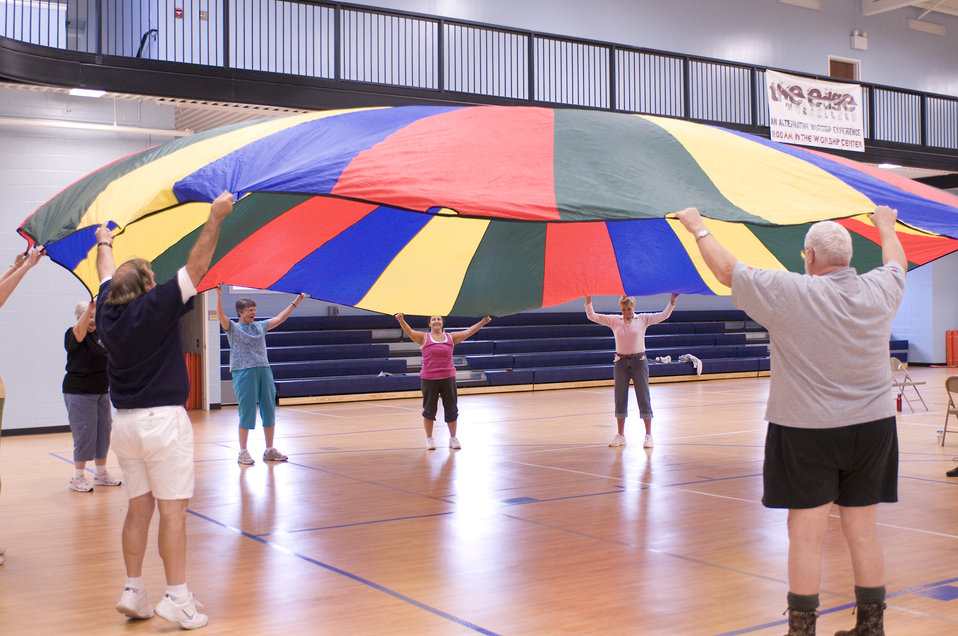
The older individuals pictured here on the wooden floor of an indoor basketball court, were participating in an exercise class consisting of stretching, and aerobic repetitive motion movements. In this particular view, the group members were working the muscles of their shoulders and arms by raising their outstretched arms over their heads then back down again, repeating this motion, while they held on to a large multicolored tarpaulin, which had been equipped with handles along its rim.